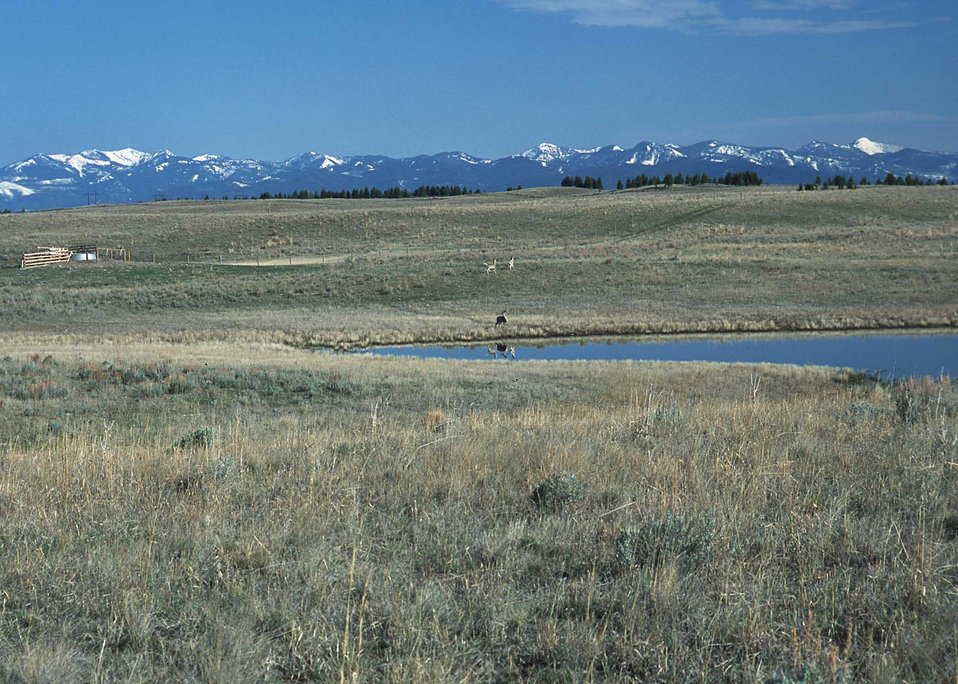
Wetlands in scenic northcentral Montana.